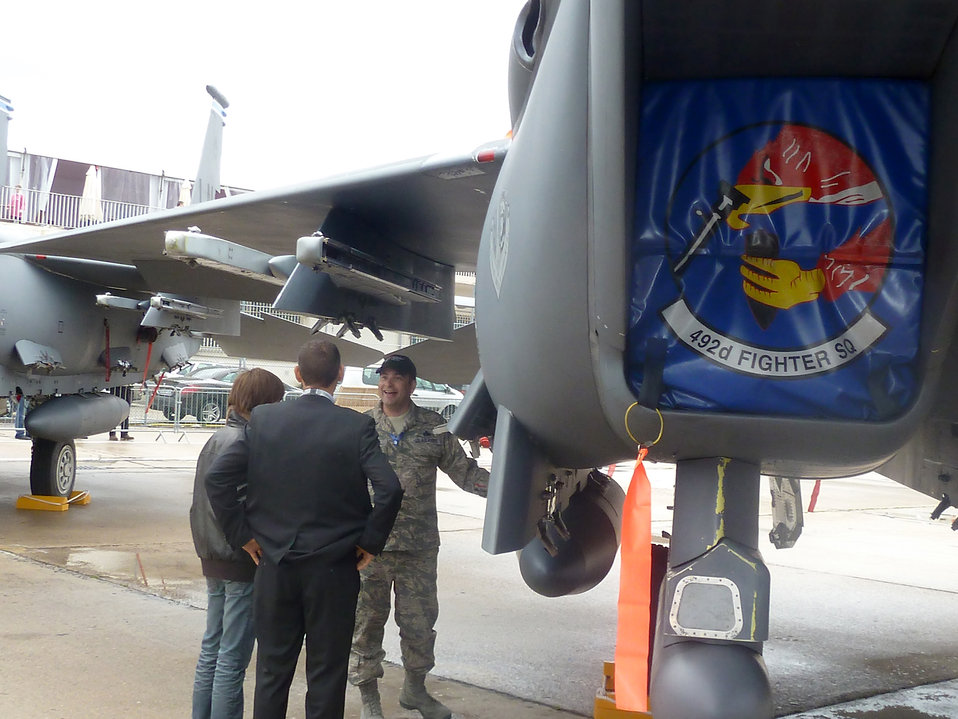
Paris Air Show

Master Sgt. Matt Larson gives a tour of an F-15E Strike Eagle June 20, 2011, during the 49th International Paris Air Show at the Le Bourget Airport in Paris. Sergeant Larson is assigned to the 48th Aircraft Maintenance Squadron at Royal Air Force Lakenheath, England.